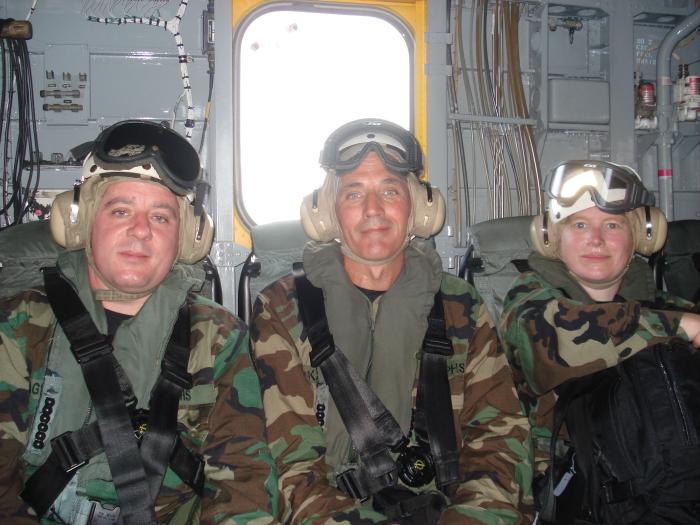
This image depicts United States Public Health Service (USPHS) officers who were being transported aboard a US Navy helicopter to a remote clinic during Operation Continuing Promise, 2008.